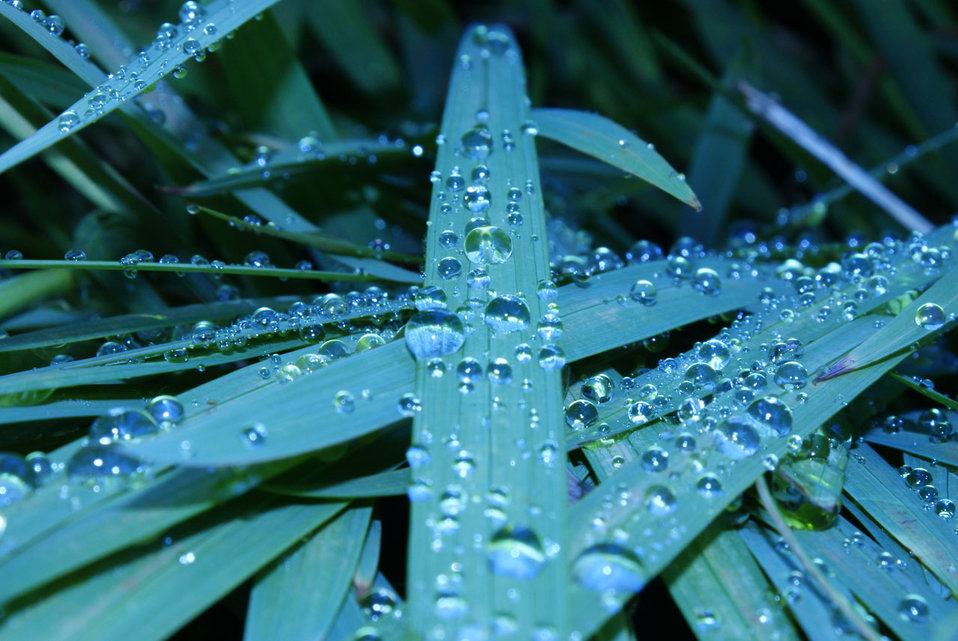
Water drops on grass..